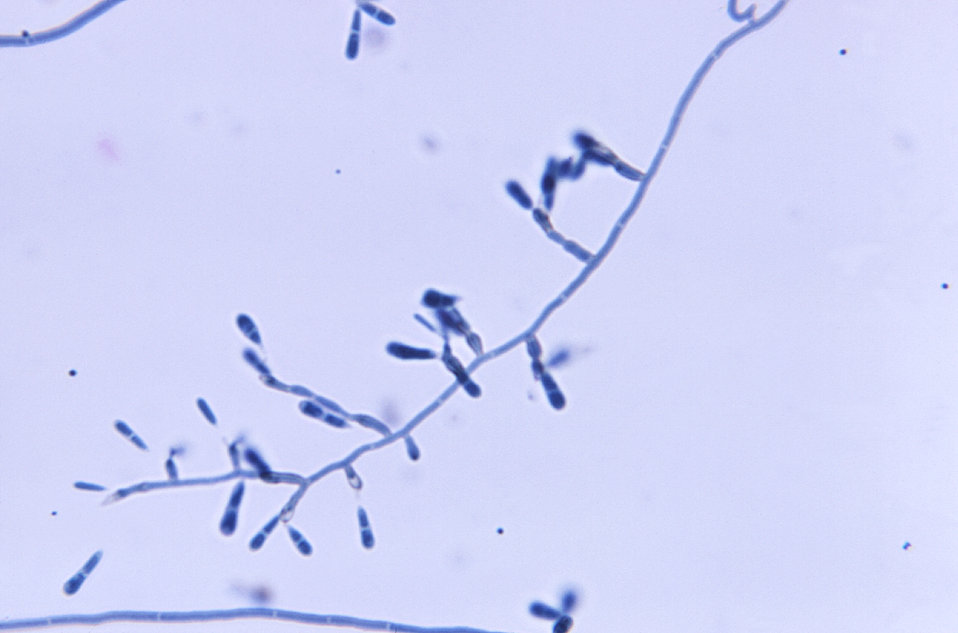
Under a magnification of 600X, this photomicrograph revealed some of the ultrastructural morphology displayed by the fungus formerly known as Dactylaris gallopavum, now known as Ochroconis gallopavum, which had been isolated from the brain of a turkey poult ill with encephalitis. Note the branching septate hyphae, as well as the conidiophores, which are topped with fungal spores, or conidia, also known as mitospores, for they are born out of the process of mitosis, and are therefore, haploid when they reach maturity. This slide culture was cultivated on potato-dextrose agar for 7 days.